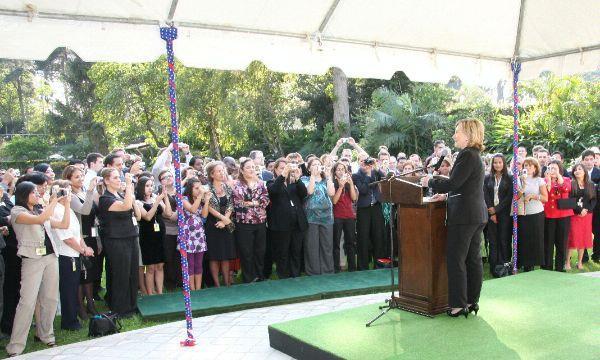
Secretary Clinton at U.S. Embassy Guatemala

U.S. Secretary of State Hillary Rodham Clinton addresses staff and families at the U.S. Embassy Guatemala in Guatemala City, Guatemala, March 5, 2010.